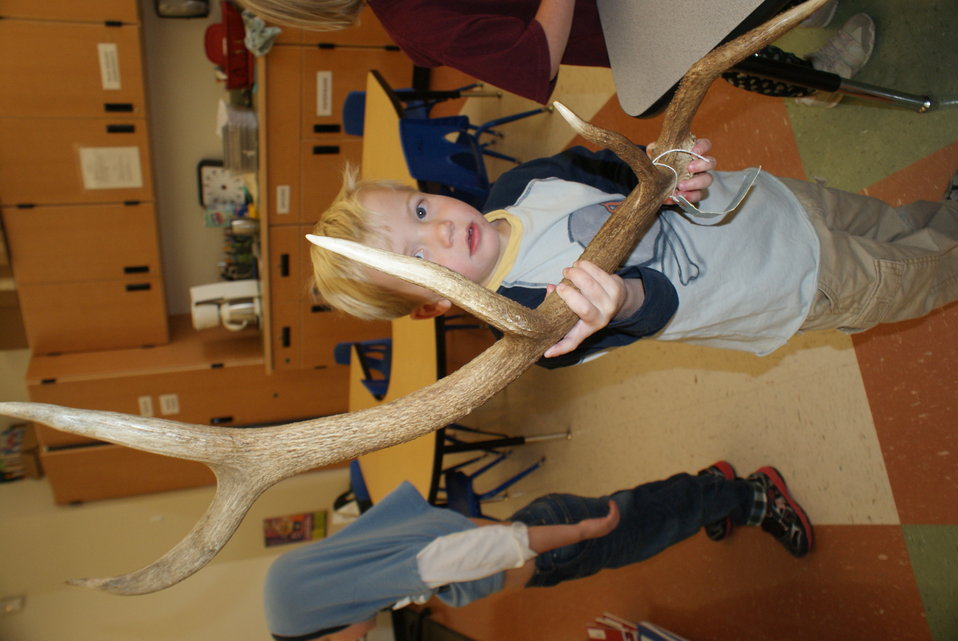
Scientists in the Community Program

U.S. Fish and Wildlife Service Mountain-Prairie Region Deputy ARD for External Affairs, Matt Kales, introduces early childhood education students at William Roberts Elementary School in Denver to some of Colorado's native and historic wildlife species.